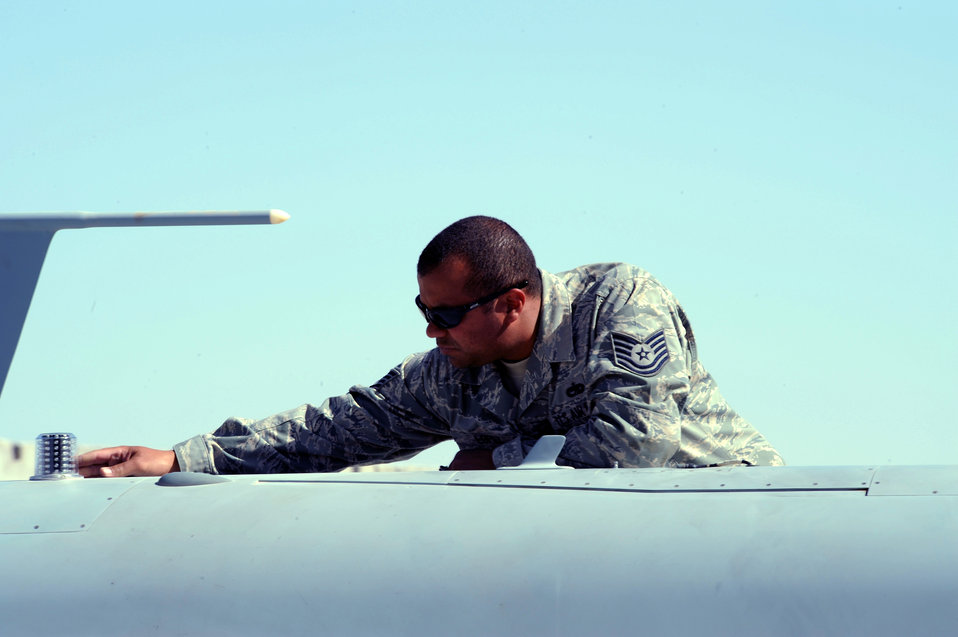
UAs not drones

Tech. Sgt. Ismael Lopez inspects an MQ-9 Reaper for cracks and other damage March 13 at Kandahar Air Base, Afghanistan. Sergeant Lopez is a quality assurance technician with the 62nd Expeditionary Reconnaissance Squadron.